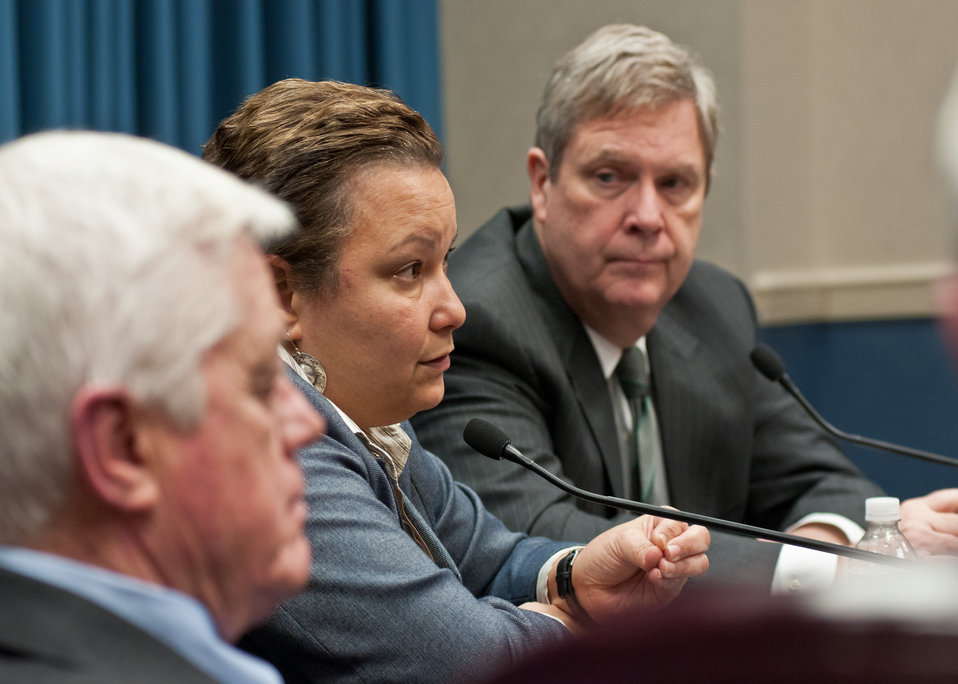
Agriculture Secretary Tom Vilsack (right) and Lisa Jackson, Administrator, Environmental Protection Agency (center) and commodity groups representing all aspects of agriculture met at the United States Department of Agriculture in Washington, D.C., to discuss mutual agricultural and environmental issues on Tuesday, December 14, 2011. To the right of Administrator Jackson is Gary Niemeyer, National Corn Growers.